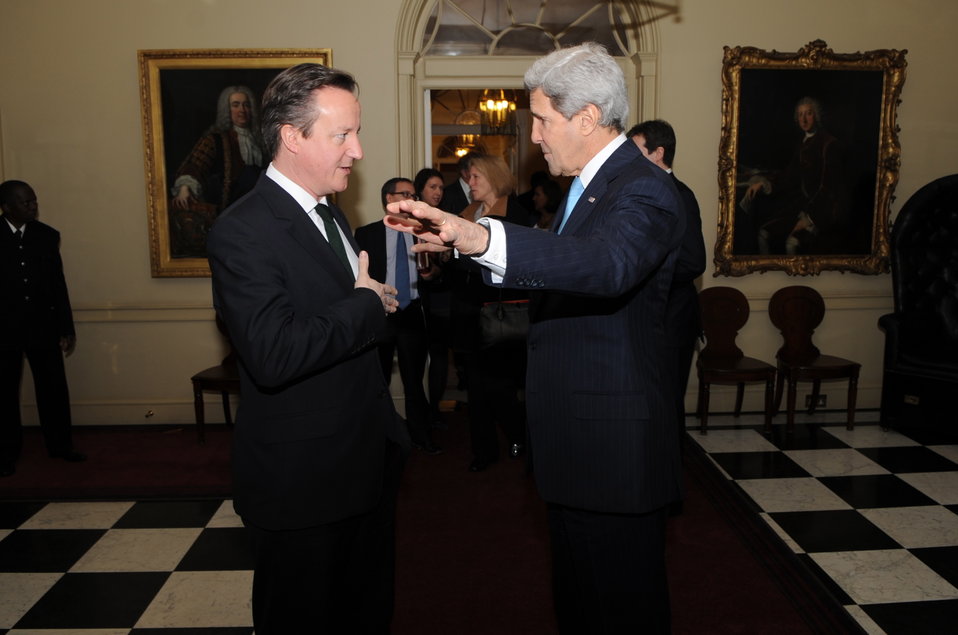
British Prime Minister David Cameron Bids Farewell to Secretary Kerry

British Prime Minister David Cameron bids farewell to U.S. Secretary of State John Kerry following at meeting at No. 10 Downing Street in London, United Kingdom, on March 14, 2014.